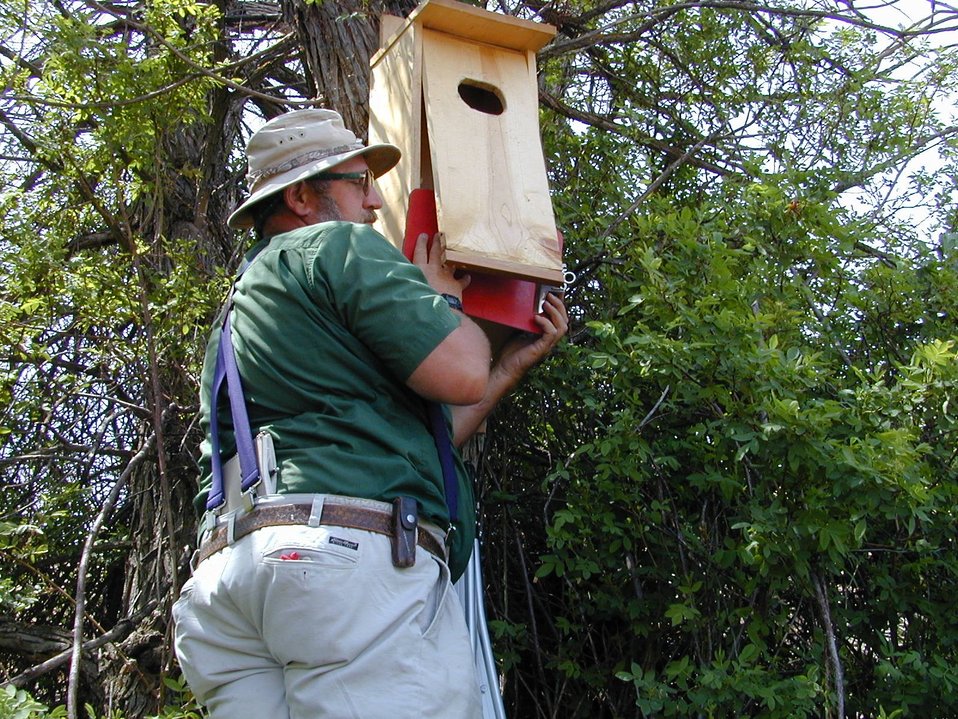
Environmental Education Fire Workshop Timberline High School Fall 2000